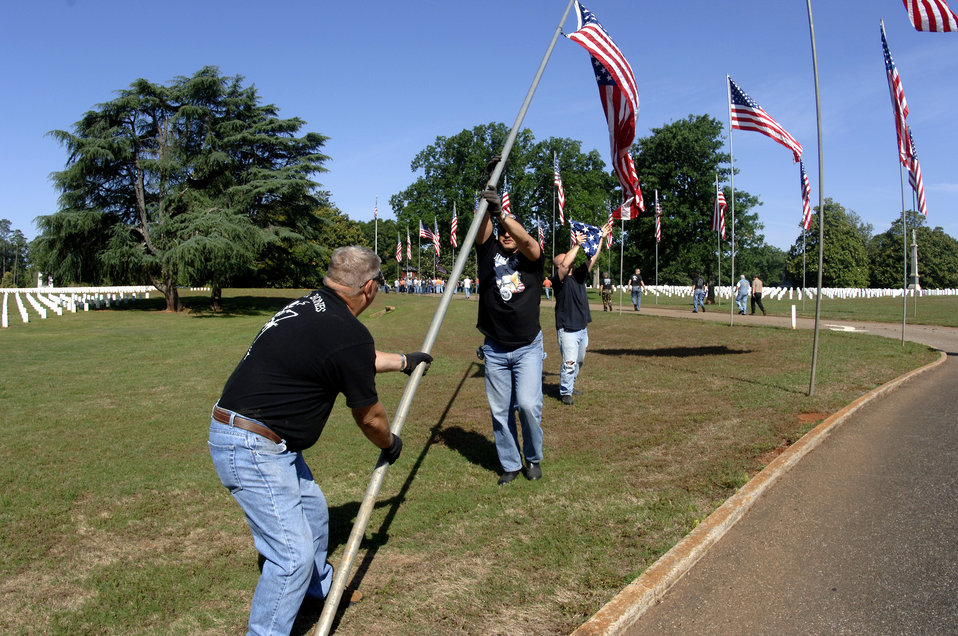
Memorial Day preparations at Andersonville Cemetery

(From left) Chief Master Sgt. Richard Patterson, Senior Master Sgt. Charles Bynum and Staff Sgt. Phil Russell set up a U.S. flag at Andersonville National Cemetery near Americus, Ga., on Friday, May 19, 2006. They were part of a group of 70 motorcycle enthusiasts from Robins Air Force Base, Ga., who volunteered to set up U.S. flags for Memorial Day. The group rode as a convoy on the 50-mile trip. Chief Patterson and Sergeants Bynum and Russell are with the 116th Air Control Wing.